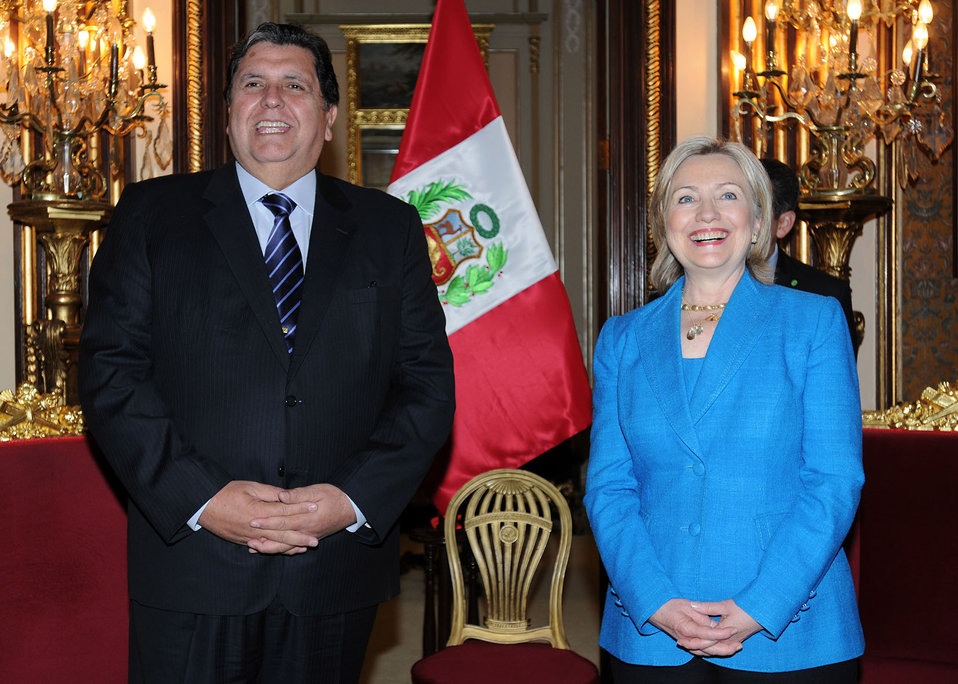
Secretary Clinton Meets With Peruvian President

U.S. Secretary of State Hillary Rodham Clinton meets with Peruvian President Alan Garcia at the Government Palace in Lima, Peru June 7, 2010.